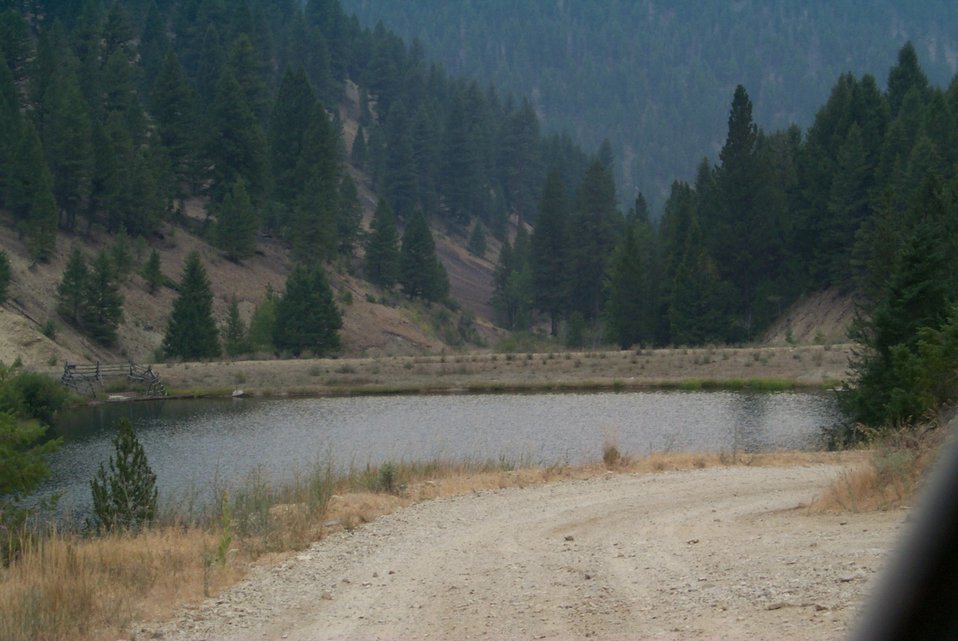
Fire Clearwater Fire Salmon Field Office USRD Upper Snake River District